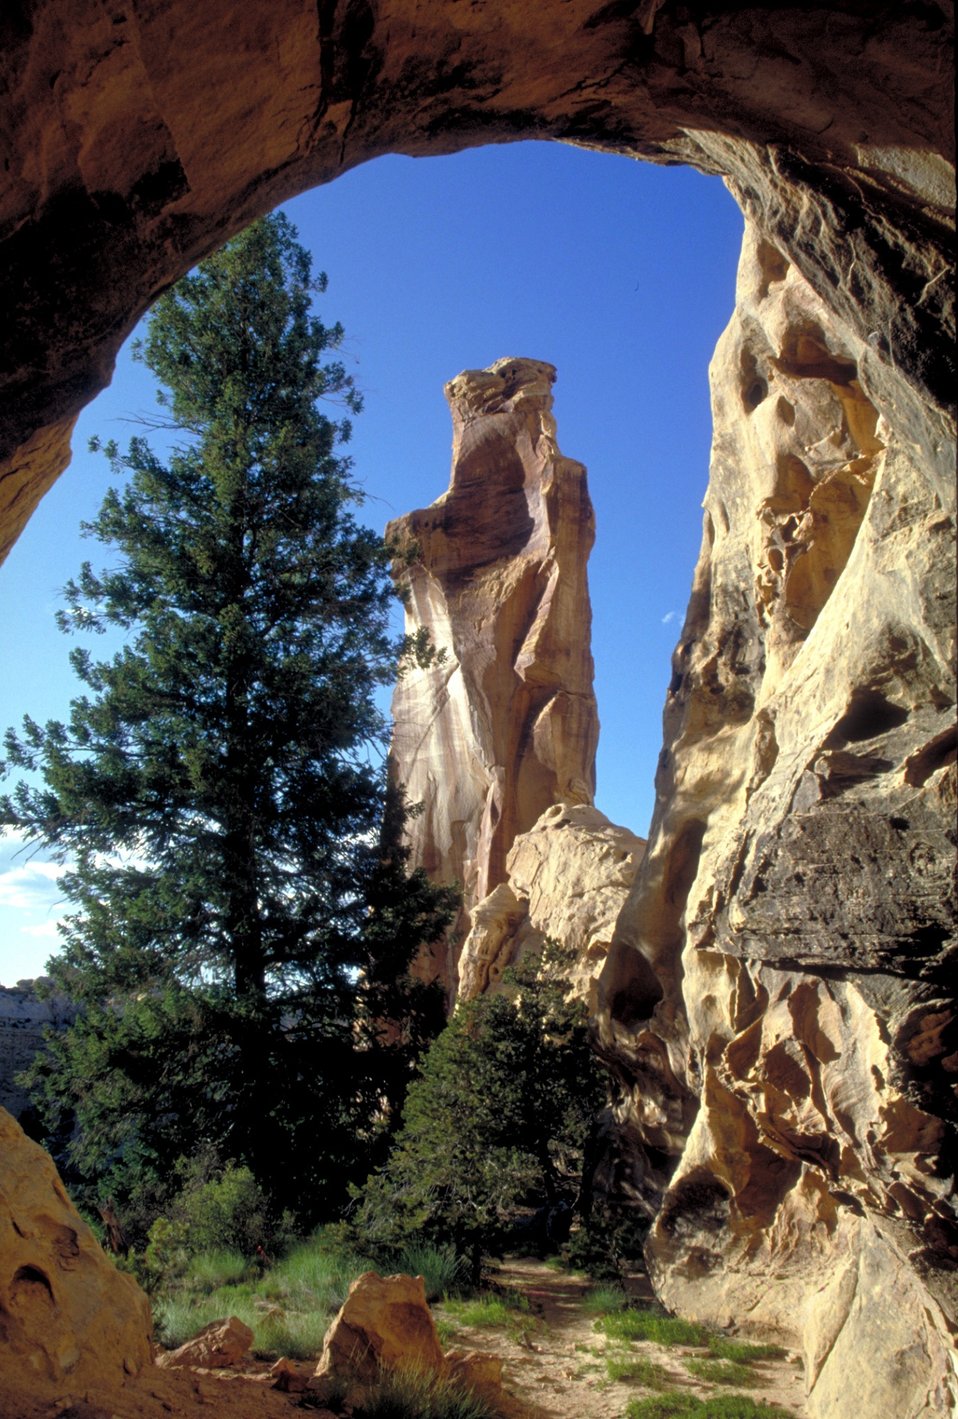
Broken Cross (formation) on the San Rafael Swell.